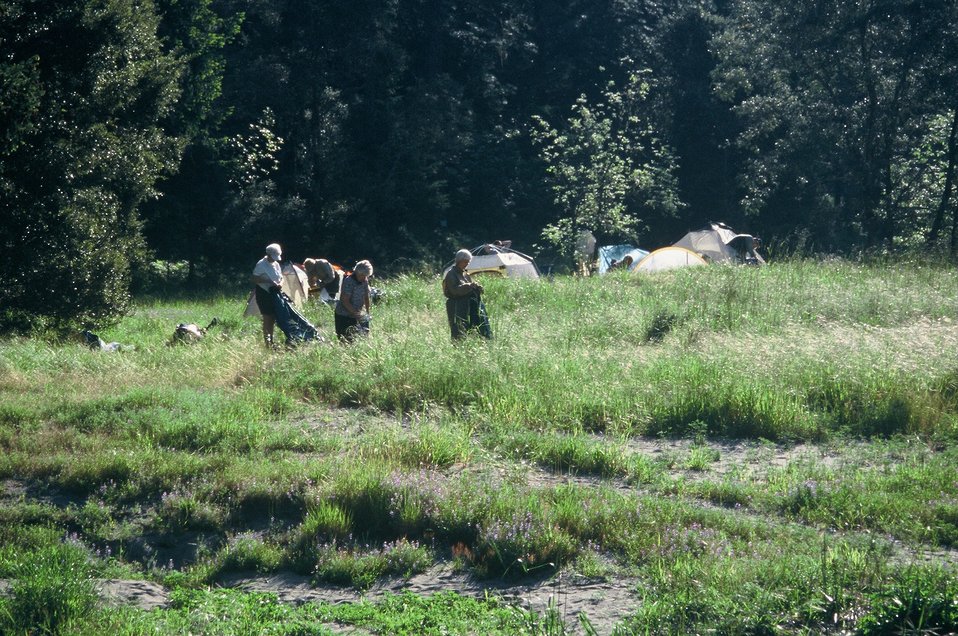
Wild section of the Rogue River from Grave Creek to Foster Bar May 19 to May 22.